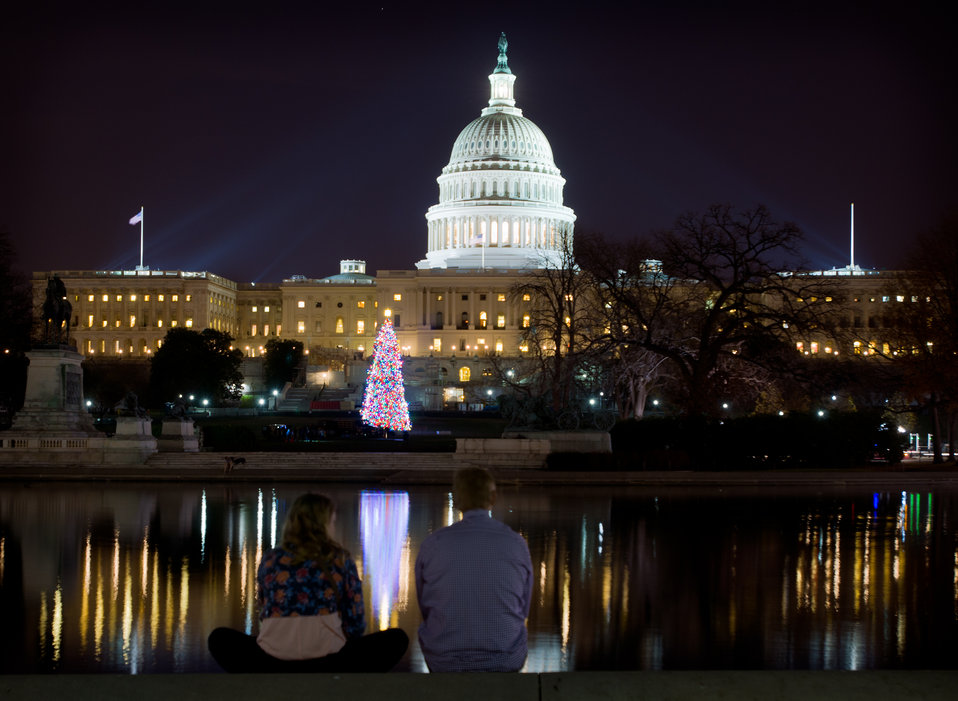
The lighted 2012 U.S. Capitol Christmas Tree from the Blanco Ranger District of the White River National Forest near Meeker, Colorado; and decorated with hand-made ornaments, continued to draw visitors to the Capitol grounds, shortly after it was turned on, on Tuesday, Dec. 4, 2012. Since November, the tree visited dozens of cities across the country as it made its way here on Nov.26, 2012. The 73-foot Englemann spruce traveled from the White River National Forest in Colorado.